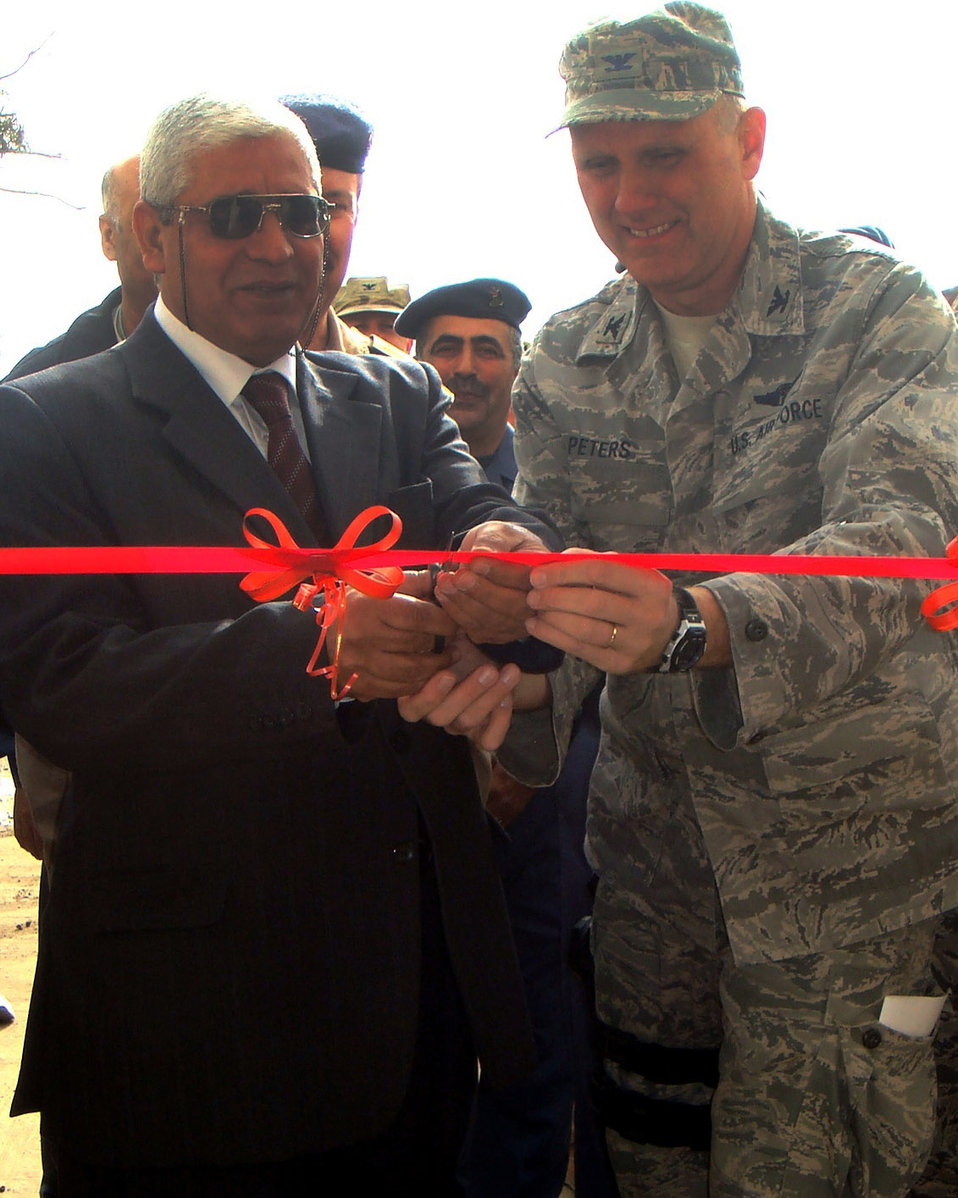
Facilities at New Al-Muthana

Iraqi air force Brig. Gen. Salah and Col. Gordon Peters cut the ribbon for a new medical facility Dec. 11, 2010, at New Al-Muthana Air Base, Iraq. The facility has state-of-the-art equipment, technology and the capability to house patients for extended periods. General Salah is the Iraq Air Force Surgeon General and Colonel Peters is the Iraq Training and Advising Mission Surgeon General. U.S. Air Force photo)